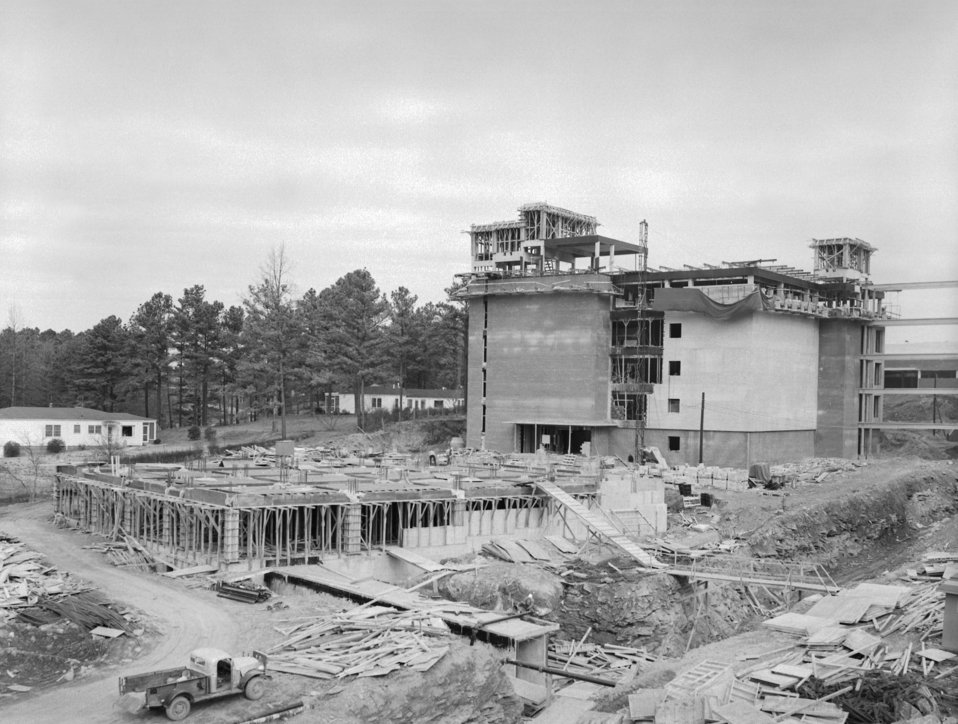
The CDC, Clifton Road, Atlanta, GA. campus under construction in 1959.